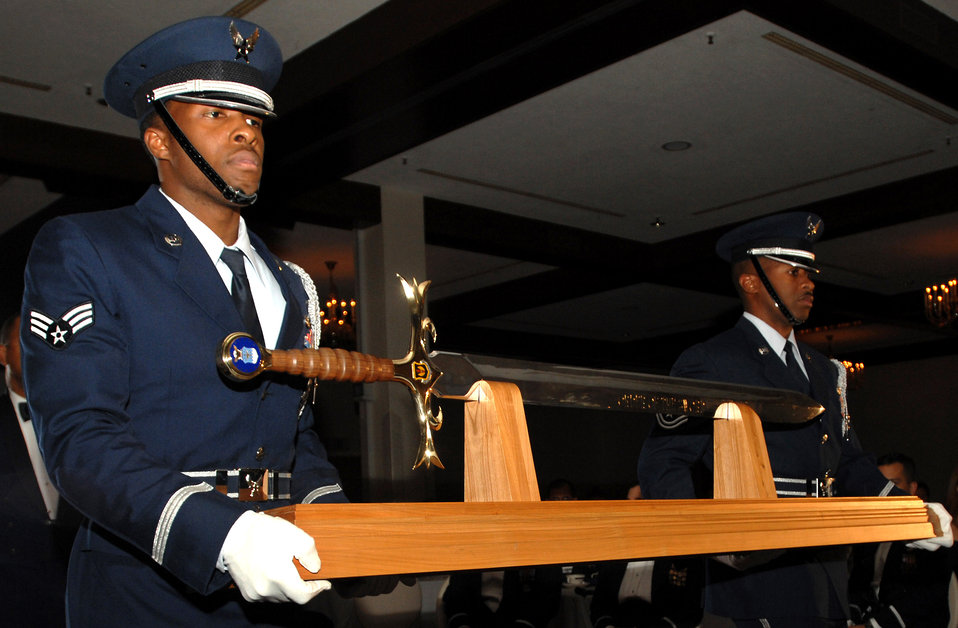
Very special recognition

The United States Air Forces in Europe sword is bought up the isle to be placed in front of the head table during the Order of the Sword ceremony for Gen. William T. Hobbins Nov. 17 at Ramstein Air Base, Germany.